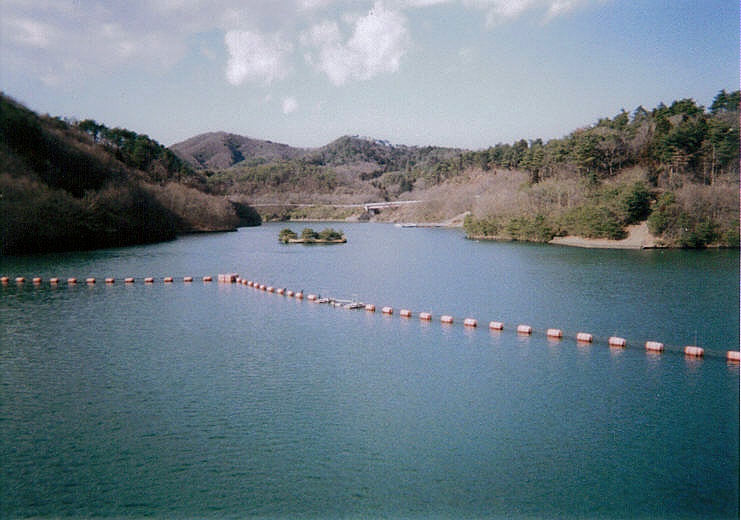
Lake